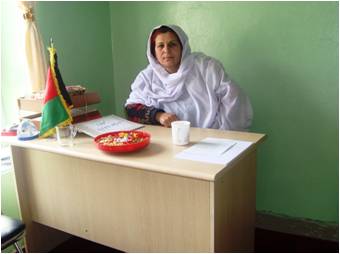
Road Paves the Way for Education

The new 103-kilometer road from Kishim to Fayzabad is bringing new business and investment to Badakhshan Province. Built through USAID’s Afghanistan Infrastructure Rehabilitation Project, the Kishim to Fayzabad Road is a vital link in the transportation network connecting Badakhshan to the rest of Afghanistan. Residents also see that the road facilitates educational opportunities for students, connecting them to schools and universities in their province and beyond.
One of the most optimistic residents is Mrs. Pashtoon Shana, the principal of Girls School No. 2 in Fayzabad. The school was originally a primary school. However, because of the new road, more students are able to get to the school and it now enrolls more than 1,200 girls in grades one through 12. Presiding over the school since 1994, Mrs. Shana has overseen many positive changes and has inspired the community to do as much as it can to serve students.
As the number of students attending Girls School No. 2 increased, the community decided to build a school for boys. Today, the boys’ school has nine grades.
Unfortunately, because there is no university in the province, graduates of Badakhshan’s high schools must go elsewhere to receive higher education. For years, the absence of a serviceable road complicated matters even further. “Our students who went to Kabul had no money, and parents spent so much time and money on transportation that the funds they had remaining to give students were greatly reduced,” Mrs. Shana said. “Now, we can send more money since it costs so little to travel.”
The provincial government plans to construct additional connecting roads branching out from the provincial center. These roads connect districts to each other and allow teachers and materials to reach children who still live in isolated villages.
No one is more hopeful for the future than Mrs. Shana, whose attentive teaching has produced engineers and doctors who live and work in Fayzabad. “Where there is a road,” she asserted, “there is development. We will see a difference.”